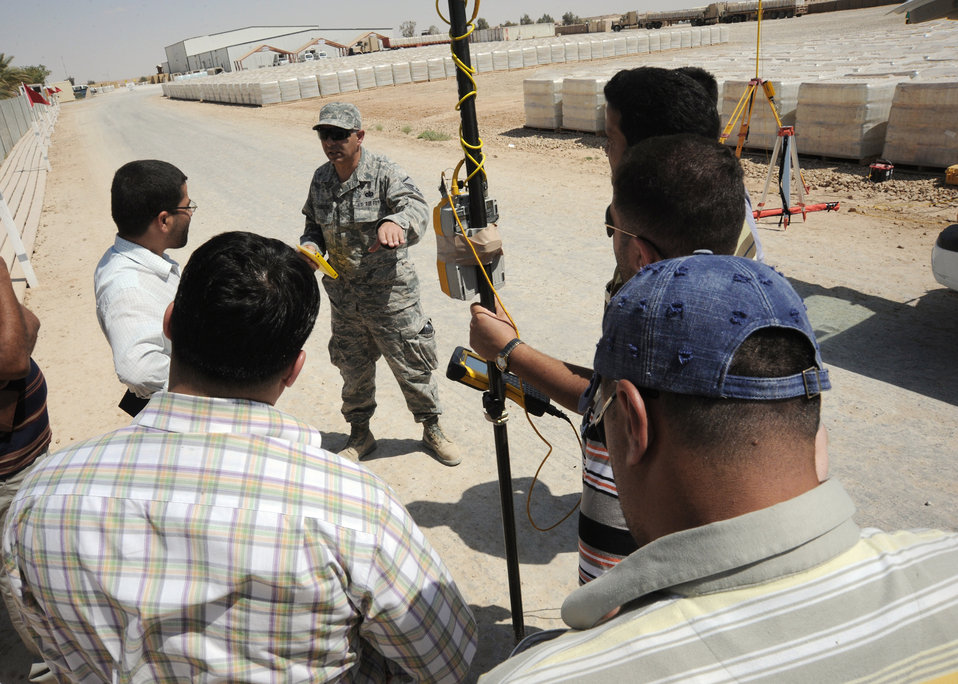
Civil engineers assist with Iraq drawdown

Master Sgt. Varoujan Garabedian teaches the Iraqi field and engineering team how to input data into the global positioning station controller April 19, 2010, at Al Asad Air Base, Iraq. Sergeant Garabedian is an engineering assistant for 732nd Expeditionary Prime Beef Squadron.